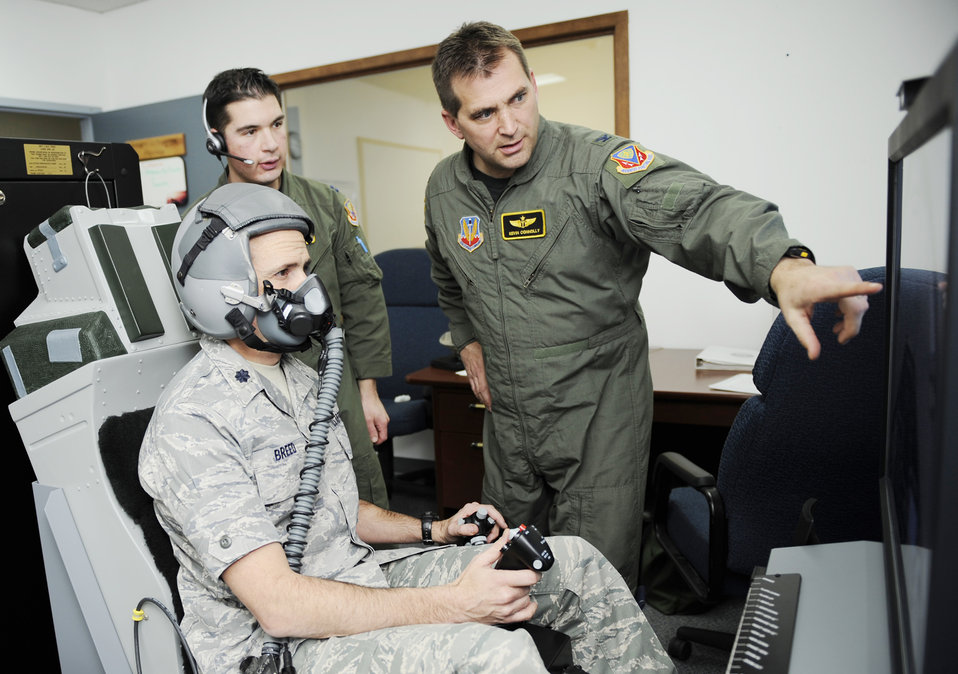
Mountain Home AFB receives hypoxia simulator

Col. Kevin Connolly, 366th Medical Group commander, shows Lt. Col. Peter Breed, 366th Aerospace Medicine Squadron commander, the first on-base, simulator-based hypoxia demonstrator Dec. 16, 2009, at Mountain Home Air Force Base, Idaho.